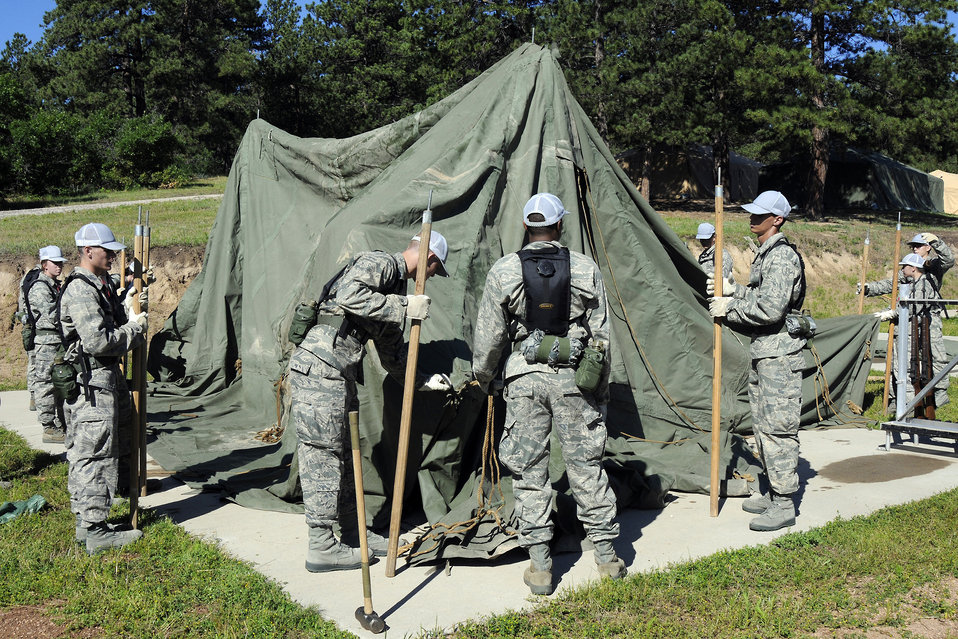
New cadets discover Jacks Valley

Basic cadets set up tents as they begin the second phase of basic cadet training in Jacks Valley on July 13.